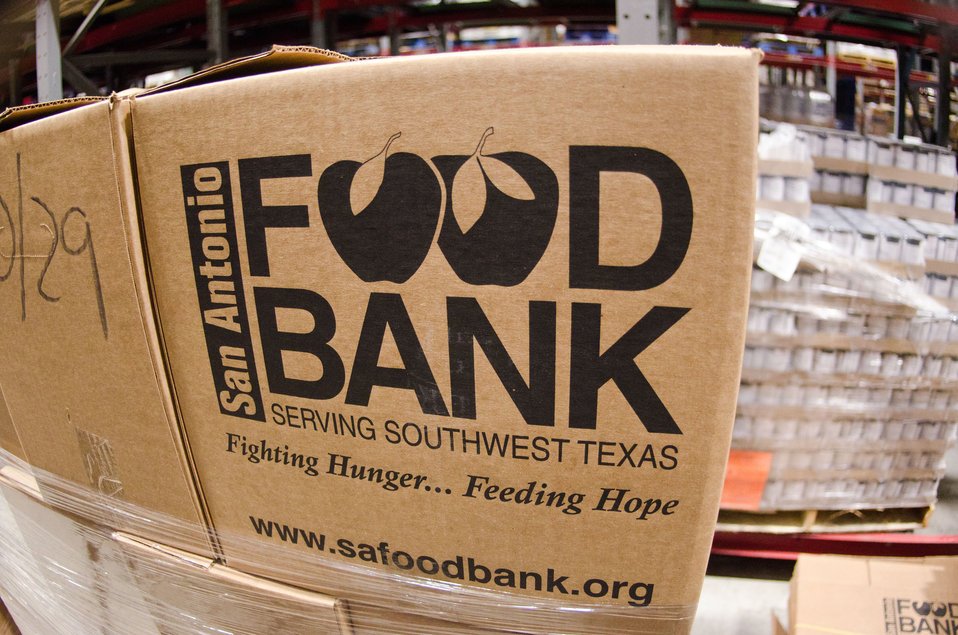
The United States Department of Agriculture donates commodities through programs such as The Emergency Food Assistance Program (TEFAP), which the San Antonio Food Bank (SAFB) packages and palletizes them for fast distribution from its San Antonio, TX., headquarters, on Monday, October 31, 2011. SAFB is a non-profit organization that serves as a clearinghouse by receiving and storing truckloads of donated food, produce, and other grocery products, they then distributes these items to over 500 service agencies that help people in need.
“We couldn’t do what we do without our partnership with USDA’” said President and CEO Eric Cooper. He continues, “We are privileged in partnering (with the USDA) to feeding kids, through the summer, with the Summer Food Service Program, and throughout the year, with the Child and Adult Care Feeding Program (CACFP). Then in our approach to feeding seniors, we partner with USDA in the Commodities Supplemental Food Program (CSFP), and the Senior Farmer’s Market (Nutrition) Program. And then work to bring all our (needy) parties together with our Supplemental Nutrition Assistance Program (SNAP) Outreach. You know, once families have access to food we believe it is important to educate them. Through the support of the SNAP-Education Program we are able to educate them during their time of need. With this comprehensive approach we are really able to get the right food, at the right amount, at the right time, to needy families throughout our community – which allows us to feed the fifty-eight thousand we do, each week.”
SAFB serves 16 counties in Southwest Texas and states, “Nearly one out of every four children and one out of every five adults in Southwest Texas lives in poverty and has difficulty meeting basic nutritional needs.” According to SAFB, sixty-five percent of the people requesting emergency food have children. “Additionally, the senior citizens and those living on a fixed income generally have limited funds for a consistent grocery budget.”
San Antonio is the seventh largest city in the nation with surrounding farms and ranches near its rivers and water supplies. When available they provide fresh surplus produce. Other commodities come from the food industry and manufacturers. The major food brand companies that for various reasons have surplus commodities donate it to SAFB.
Texas farmers supply fresh produce to their Fresh Produce Program.
Public donations come in the form of money, food, volunteer time, and advocacy.
Their fleet of trucks pickup and deliver food as needed.